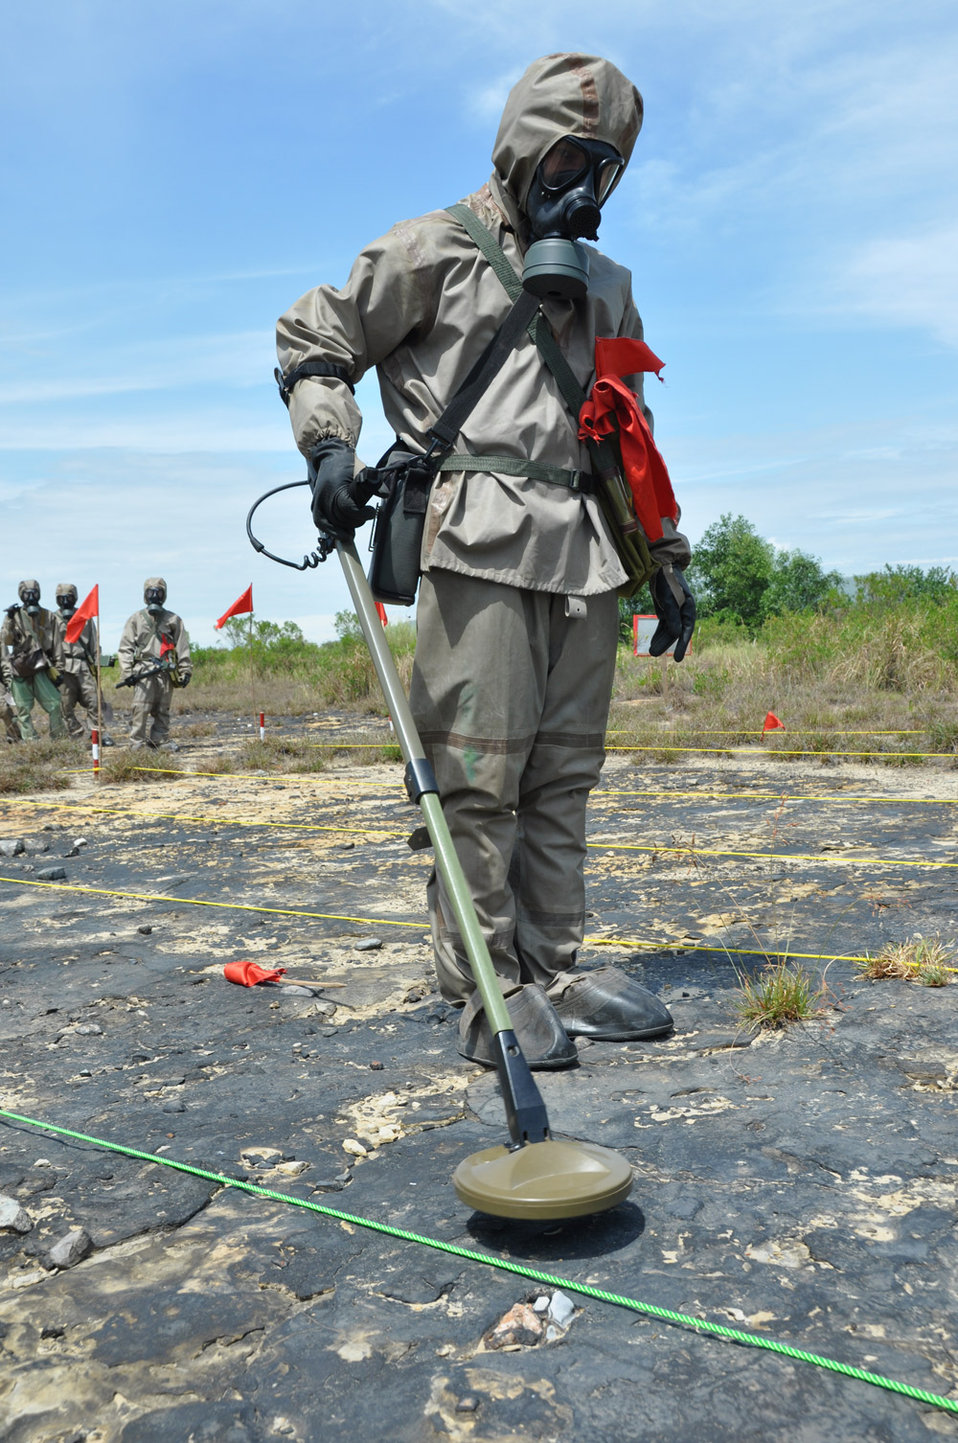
A Vietnamese soldier demonstrates UXO detection and clearance in Danang. June 17, 2011